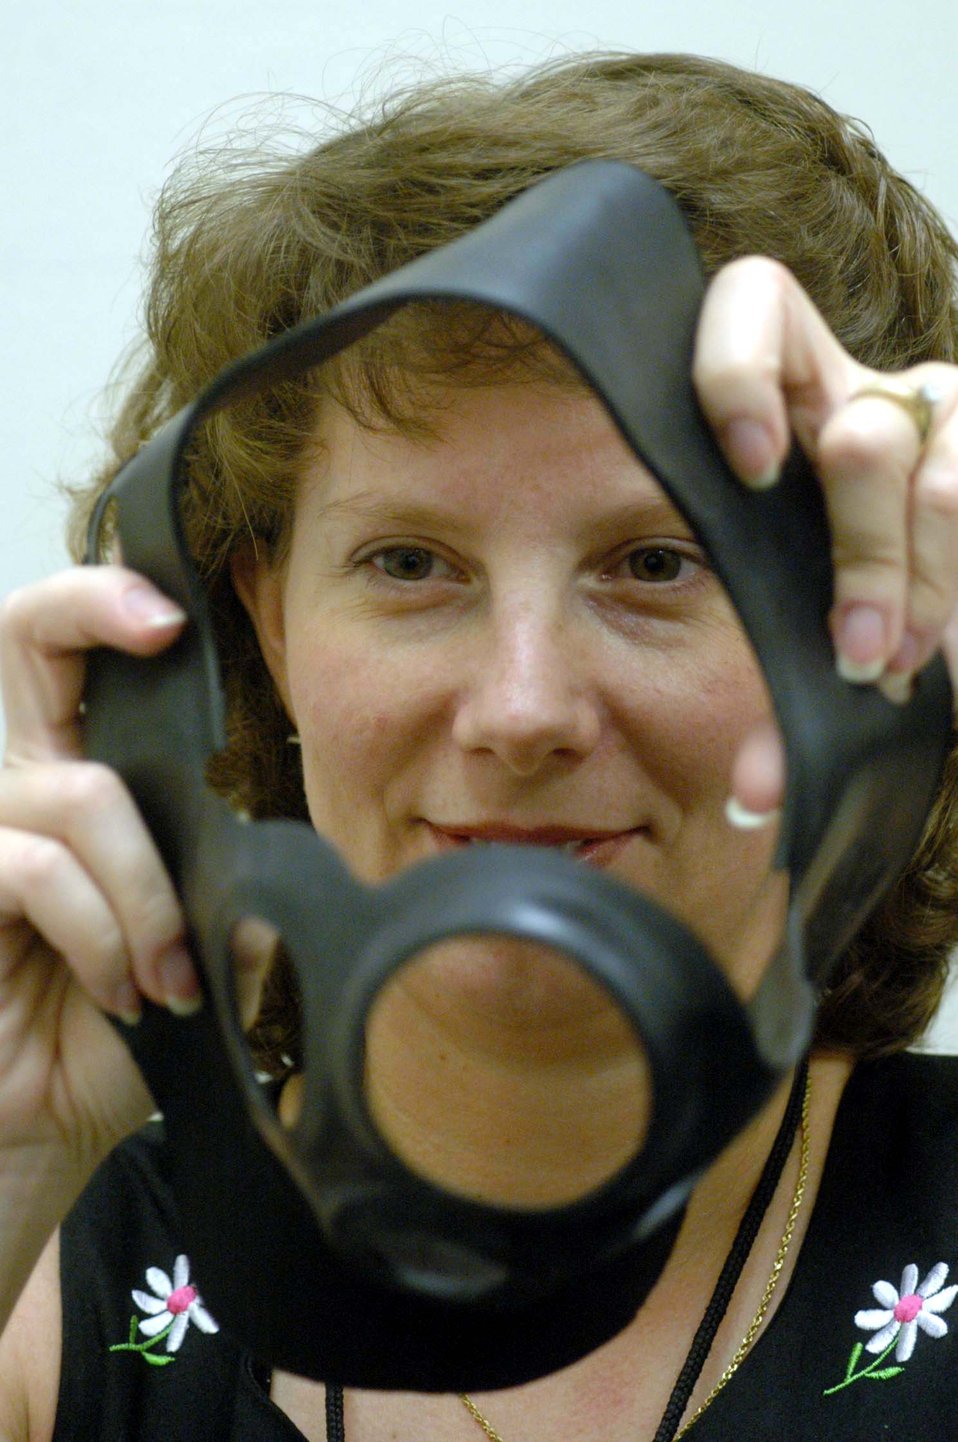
New protective layer

ROBINS AIR FORCE BASE, Ga. -- Laurie Beebe shows off the